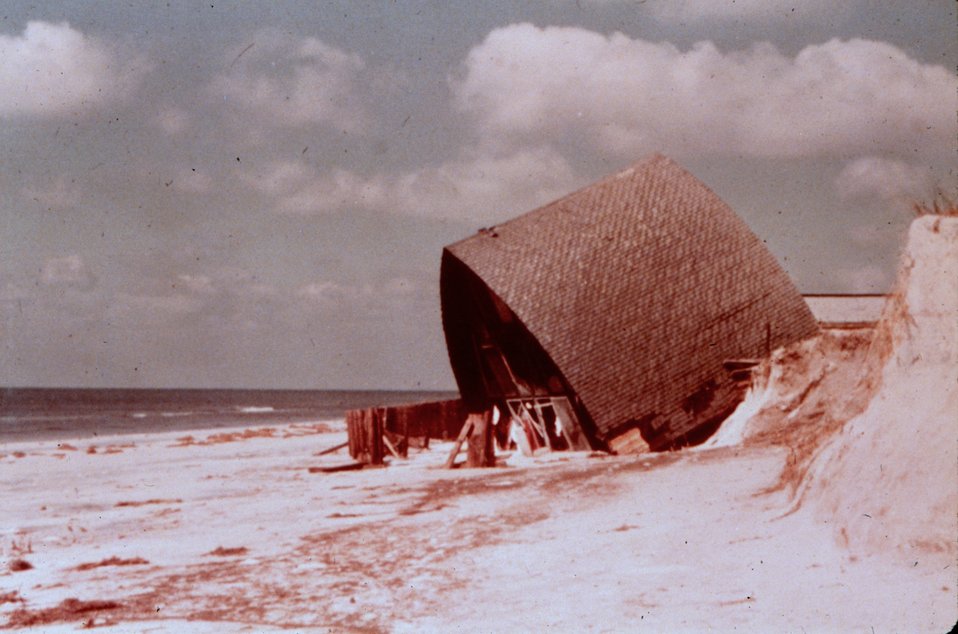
Remains of a house built on a concrete slab Home destroyed by Hurricane Eloise, a Category 3 storm